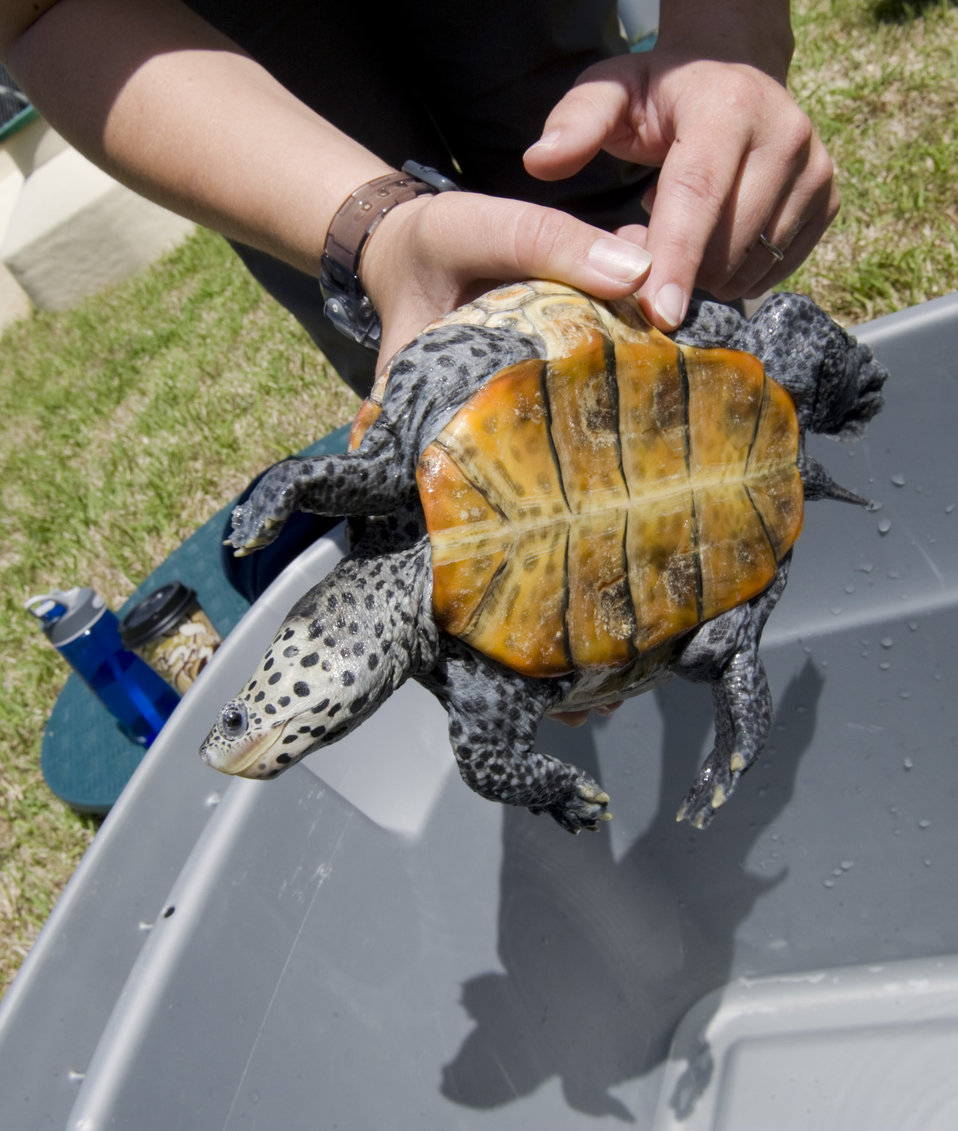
Turtle belly

The Grand Bay National Estuarine Research Reserve is researching the diamondback terrapin turtle, whose habitat is likely to be inundated as the sea rises.